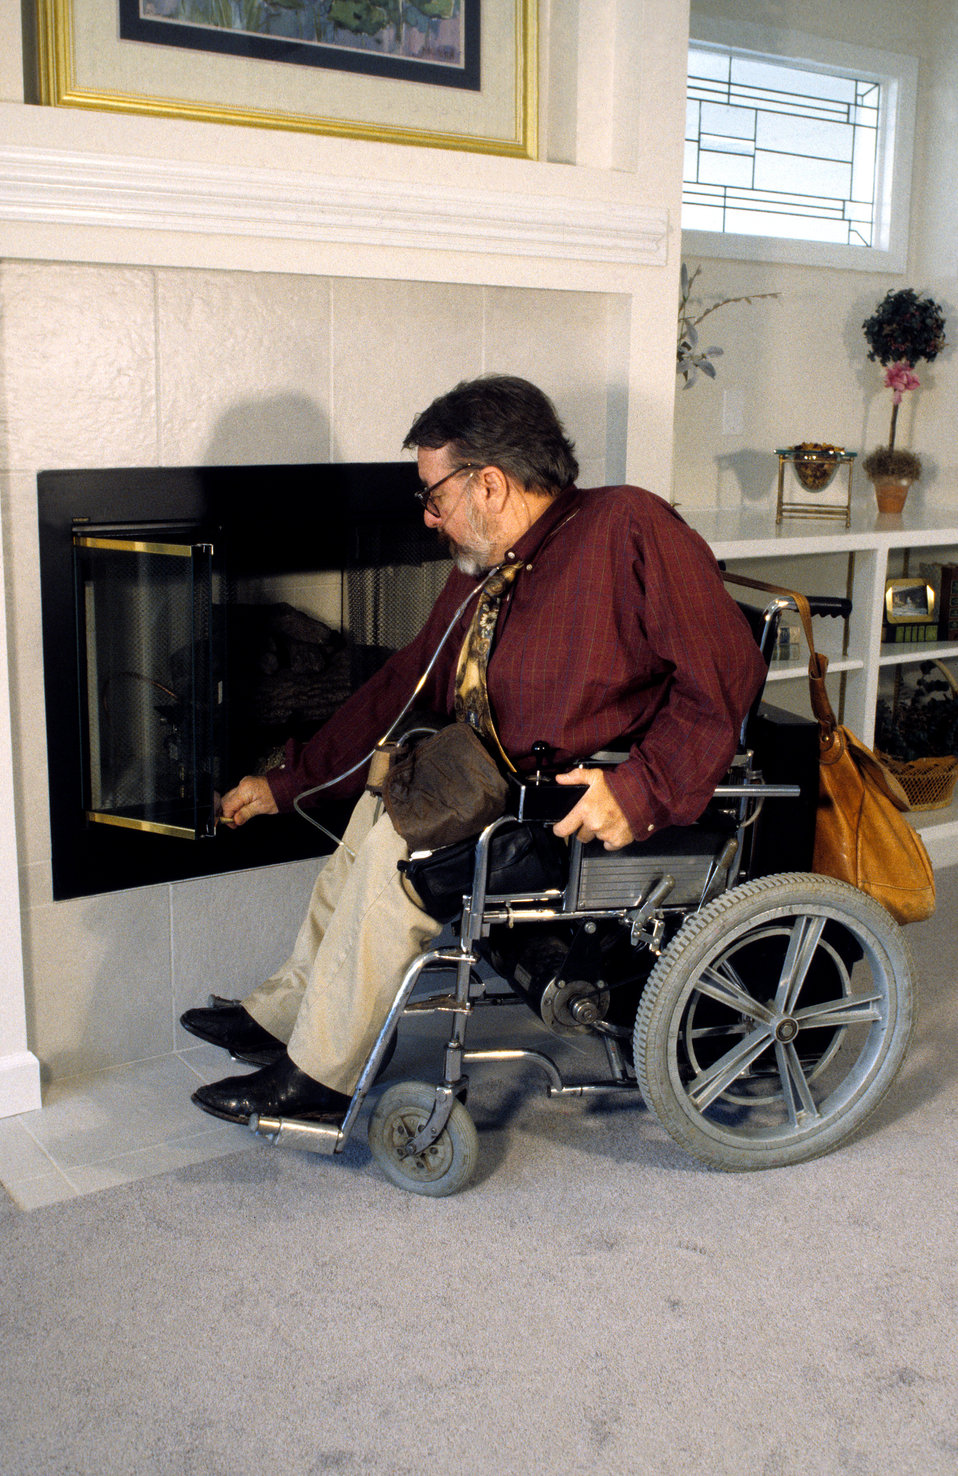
In this 1994 image, a wheelchair-seated man was poised in front of a raised hearth-type fireplace, as he was operating the fireplace controls. Raising the hearth above ground level minimized the need for bending over and stooping, thereby, facilitating use by those with balance limitations, back problems, a short stature, or seated in mobility devices such as the man pictured here.The Center for Universal Design (CUD) is a national research, information, and technical assistance center that evaluates, develops, and promotes accessible and universal design in housing, buildings, outdoor and urban environments and related products. The Center's work manifests the belief that all new environments and products, to the greatest extent possible, should be usable by everyone regardless of their age, ability, or circumstance.